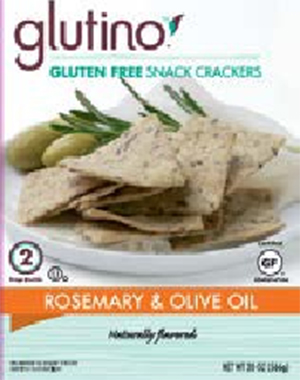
Gluten Free Snack RECALLED – Rosemary and Olive Oil Snack Crackers

June 2, 2014 – Product Recall – Glutino Voluntarily Recalls Glutino Rosemary and Olive Oil Snack Crackers (4.25 oz. and 20 oz.) Because of Possible Health Risk.